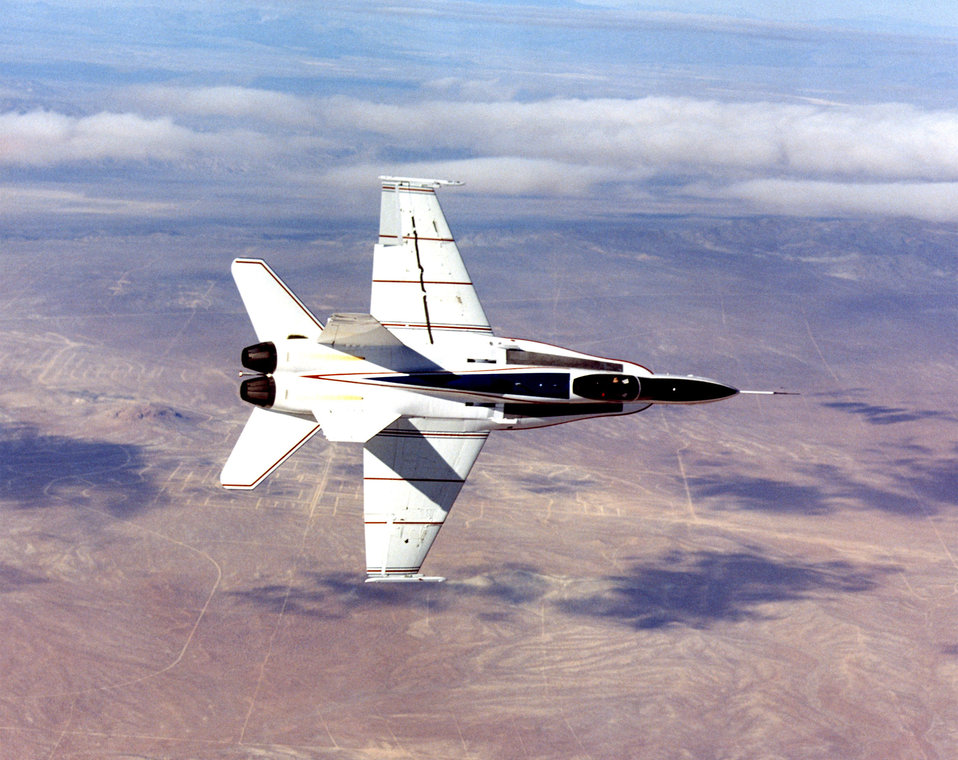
Wing warping could change shape of future aircraft

OVER EDWARDS AIR FORCE BASE, Calif. -- NASA's modified Active Aeroelastic Wing F/A-18 completes a 360-degree aileron roll during a recent research flight.